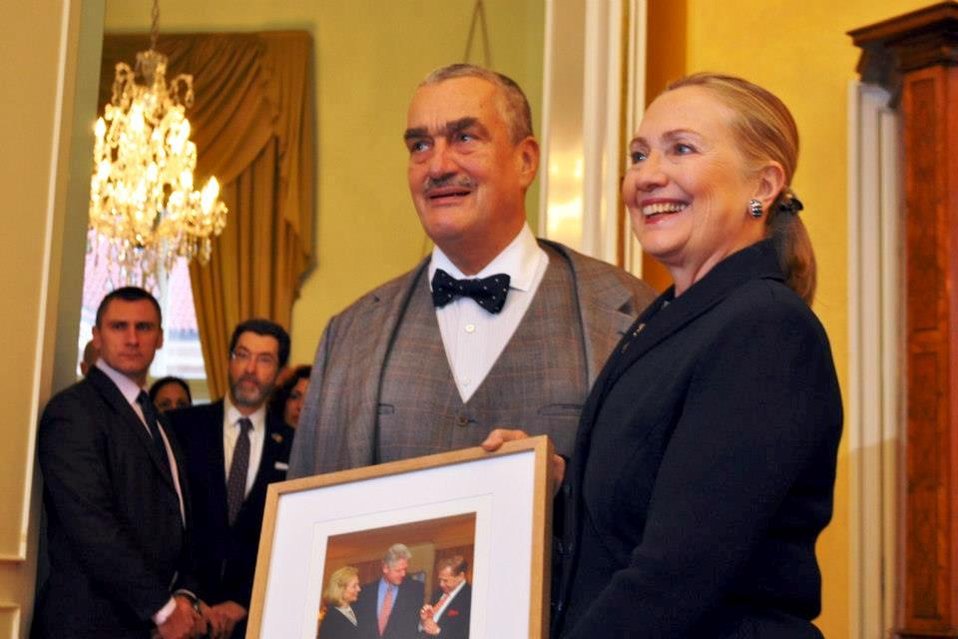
Secretary Clinton With Czech Foreign Minister Schwarzenberg

U.S. Secretary of State Hillary Rodham Clinton is presented with a photograph of a meeting of Secretary Clinton and President Bill Clinton with the late Czech President Vaclav Havelwith by Czech Foreign Minister Karel Schwarzenberg in Prague, Czech Republic, December 3, 2012.